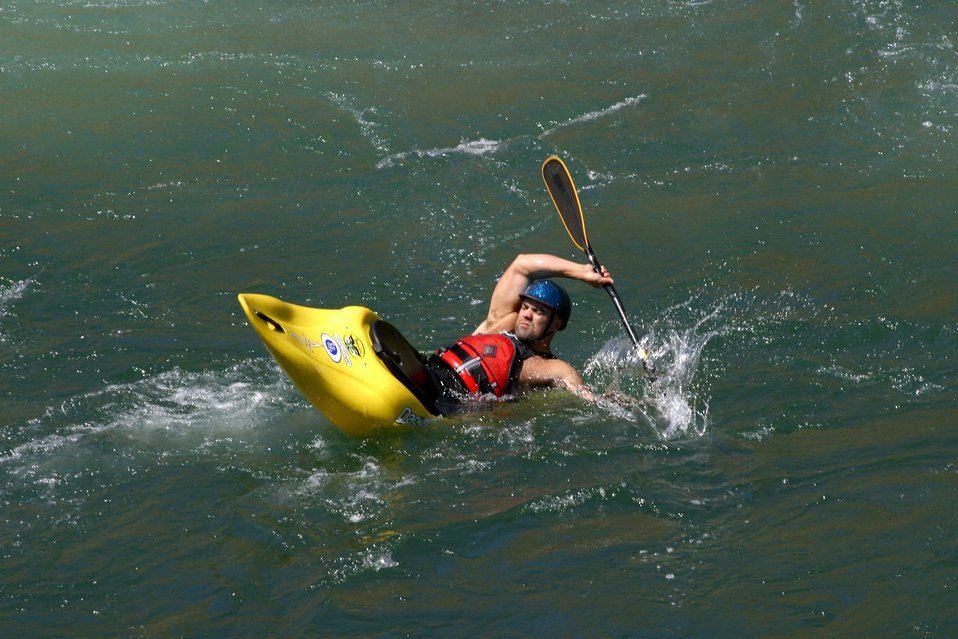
Boxcar Rapids class III, has large waves with a small drop that form turbulent currents. 7/26/03 Pelton Dam 3600 cfs: Moody Rapids 4300 cfs.